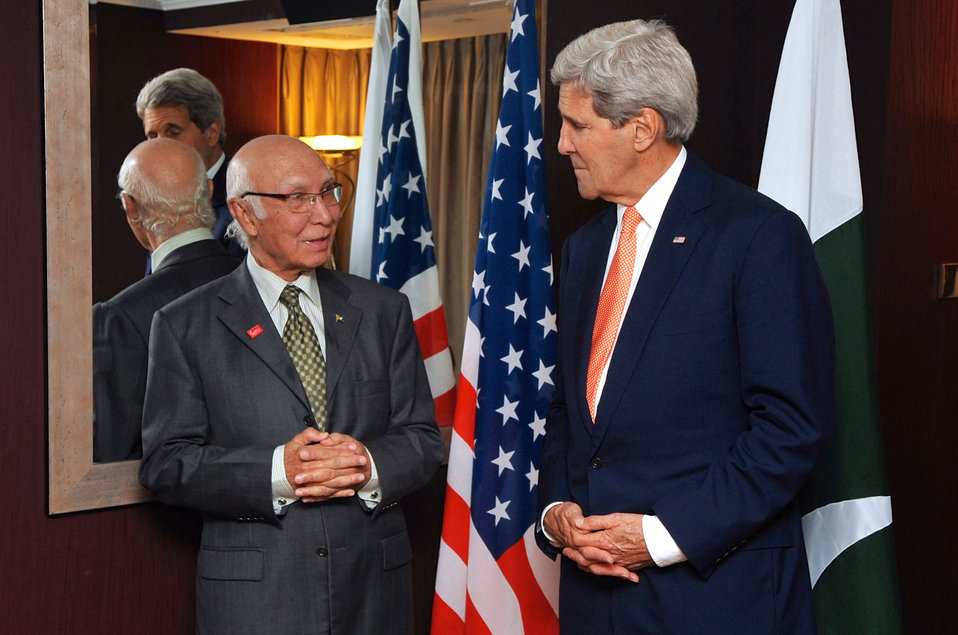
Secretary Kerry Listens as Pakistani National Security Adviser Aziz Addresses Reporters in London

U.S. Secretary of State John Kerry listens as Pakistani National Security and Foreign Affairs Adviser Sartaj Aziz addresses reporters before their bilateral meeting in London, UK, on June 13, 2014.